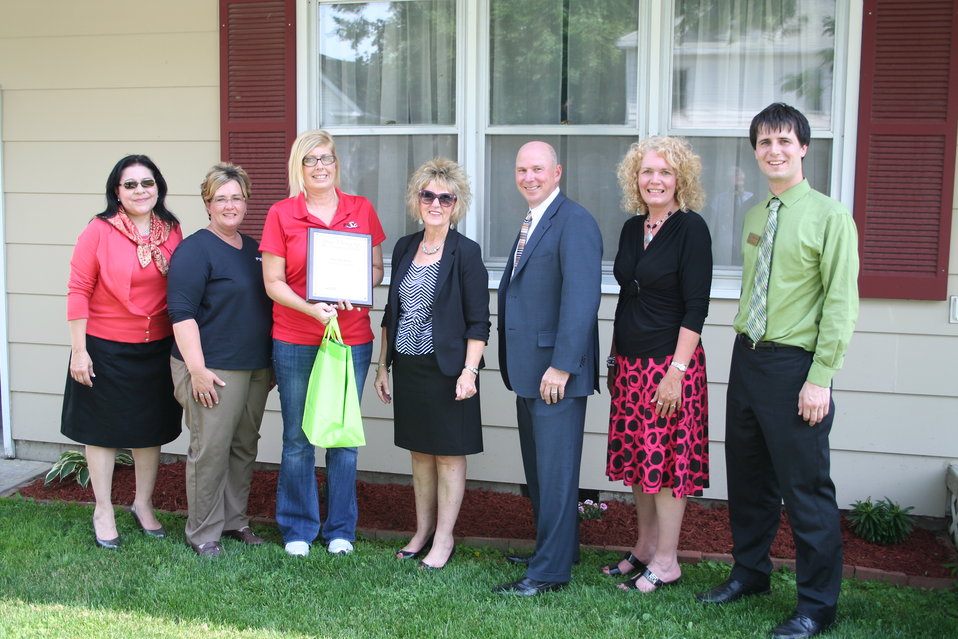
Koester Homeownership Event-Bowling Green--12

A new home is created thanks to support from the U.S. Department of Agriculture’s (USDA) Rural Development (RD) Rural Housing Programs. (L to R USDA RD Rural Housing Administrator Trevino, Peoples Bank and Trust Christine Rutherford, homeowner Stefanie Koester, USDA RD Missouri State Director Janie Dunning, Equitable Mortgage Mike Mullen, Missouri Housing Program Director Pam Anglin, and Senator Claire McCaskill’s (MO) Office representative Corey Husak).